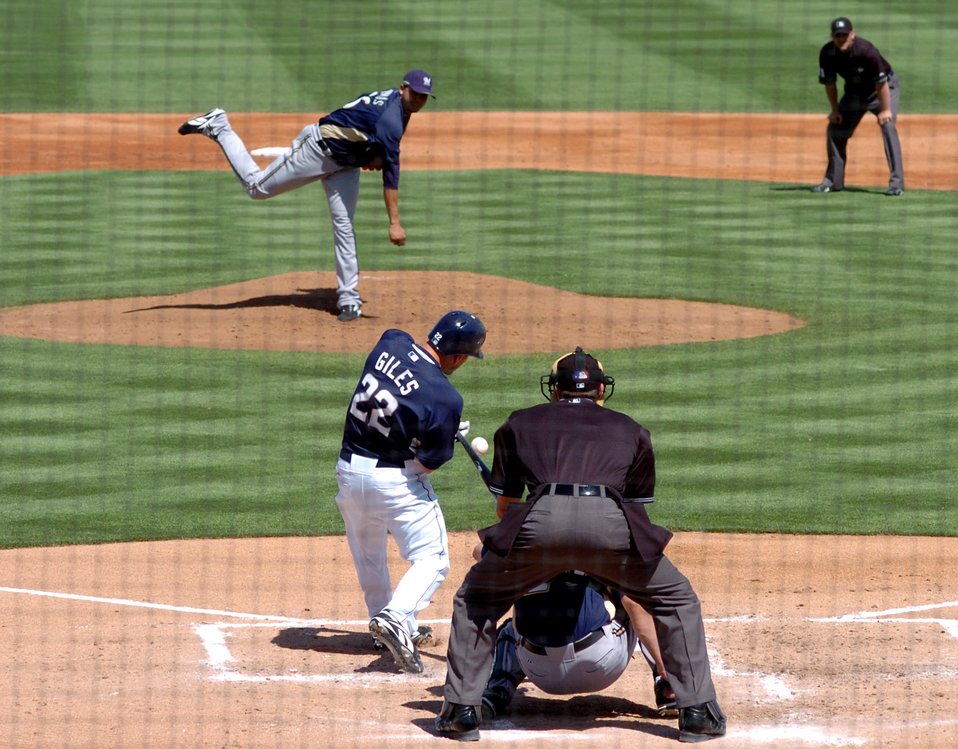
Play ball!

The city of Peoria, Ariz., and the Peoria Sports Complex played host to Air Force Week during a 2007 spring training baseball game between the San Diego Padres and the Milwaukee Brewers March 21. Airmen were invited to attend and the Luke Air Force Base Honor Guard posted the colors. The Wings of Blue parachute demonstration team jumped in the game ball. Staff Sgt. Elizabeth Spradley and Chief Master Sgt. of the Air Force Rodney J. McKinley threw out the first pitches.